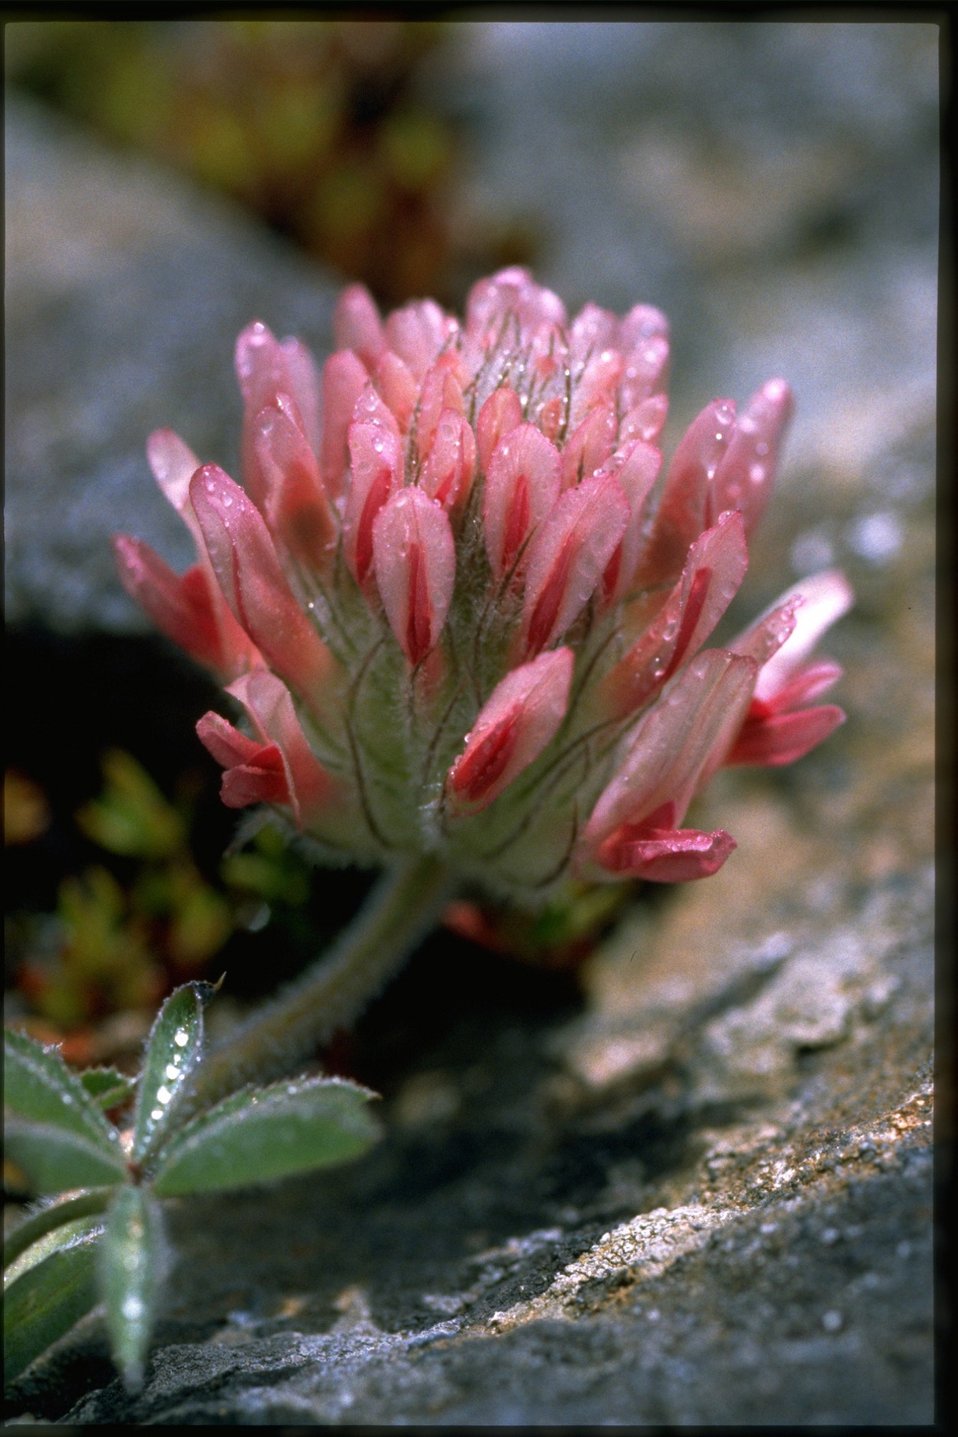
Closeup shot of Big-headed clover, Trifolium macrocephalum.